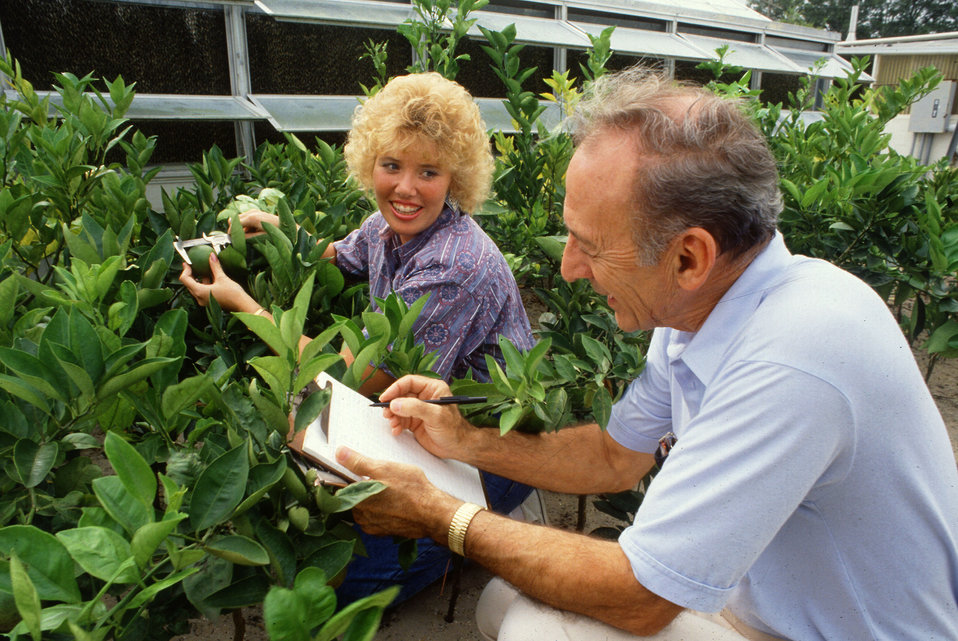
U.S. Department of Agriculture (USDA) Agricultural Research Service (ARS) plant physiologist George Yelenosky records data as Orlando Southwest Middle School science teacher Kim Ruhle Paschall measures citrus fruit diameters.